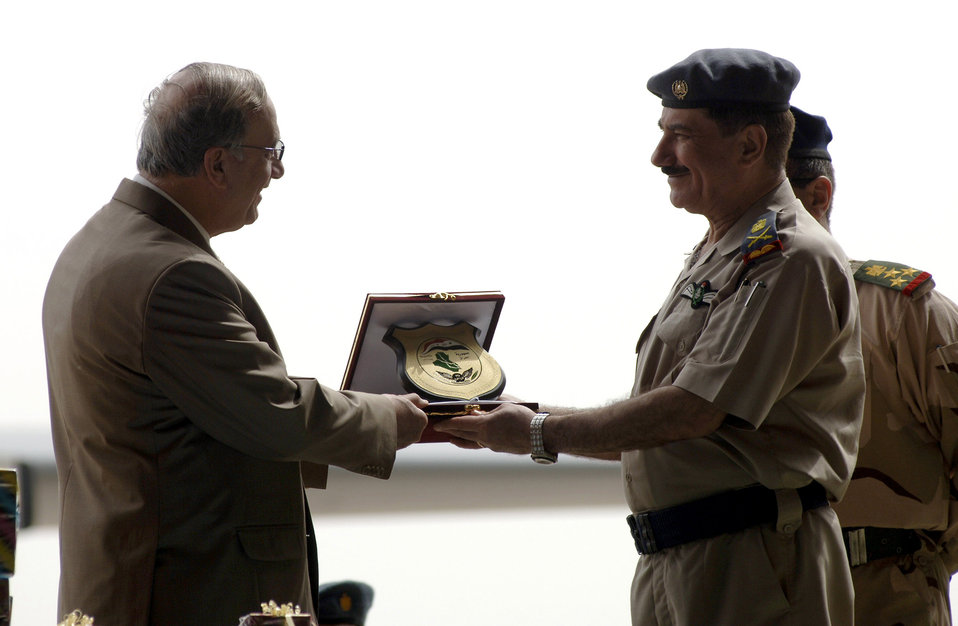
Iraqi air force celebrates 76th anniversary

Brig. Gen. Abdul Kareem, New Al Muthana Air Base commander presents the Iraqi Minister of Defense Abd al-Qadir al-Mufriji with a plaque of appreciation April 22 during the celebration of the 76th anniversary of the Iraqi air force at the New Al Muthana Air Base in Baghdad, Iraq.